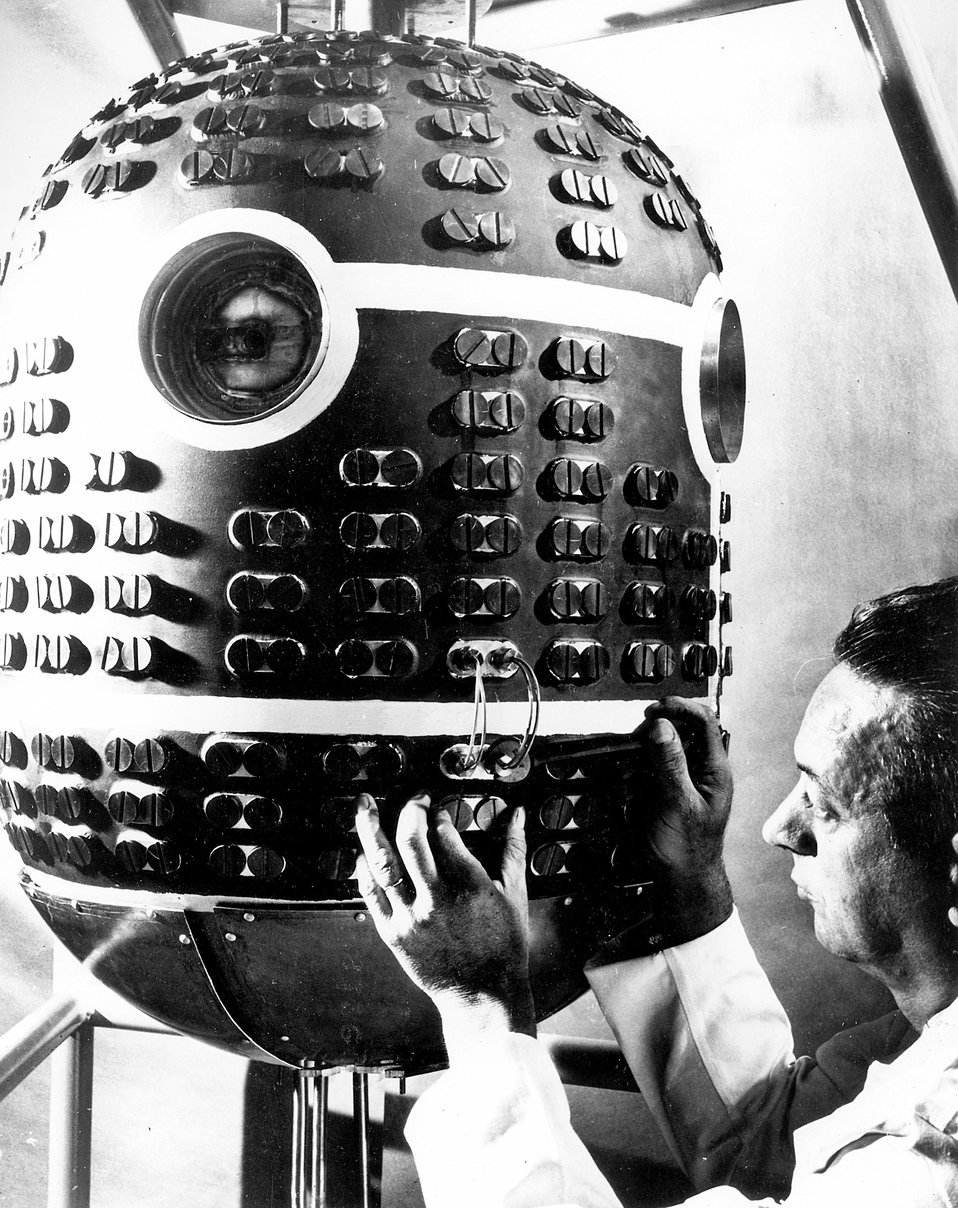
SNAP-1A, big brother of the grapefruit-sized, 2.5 watt SNAP-3.